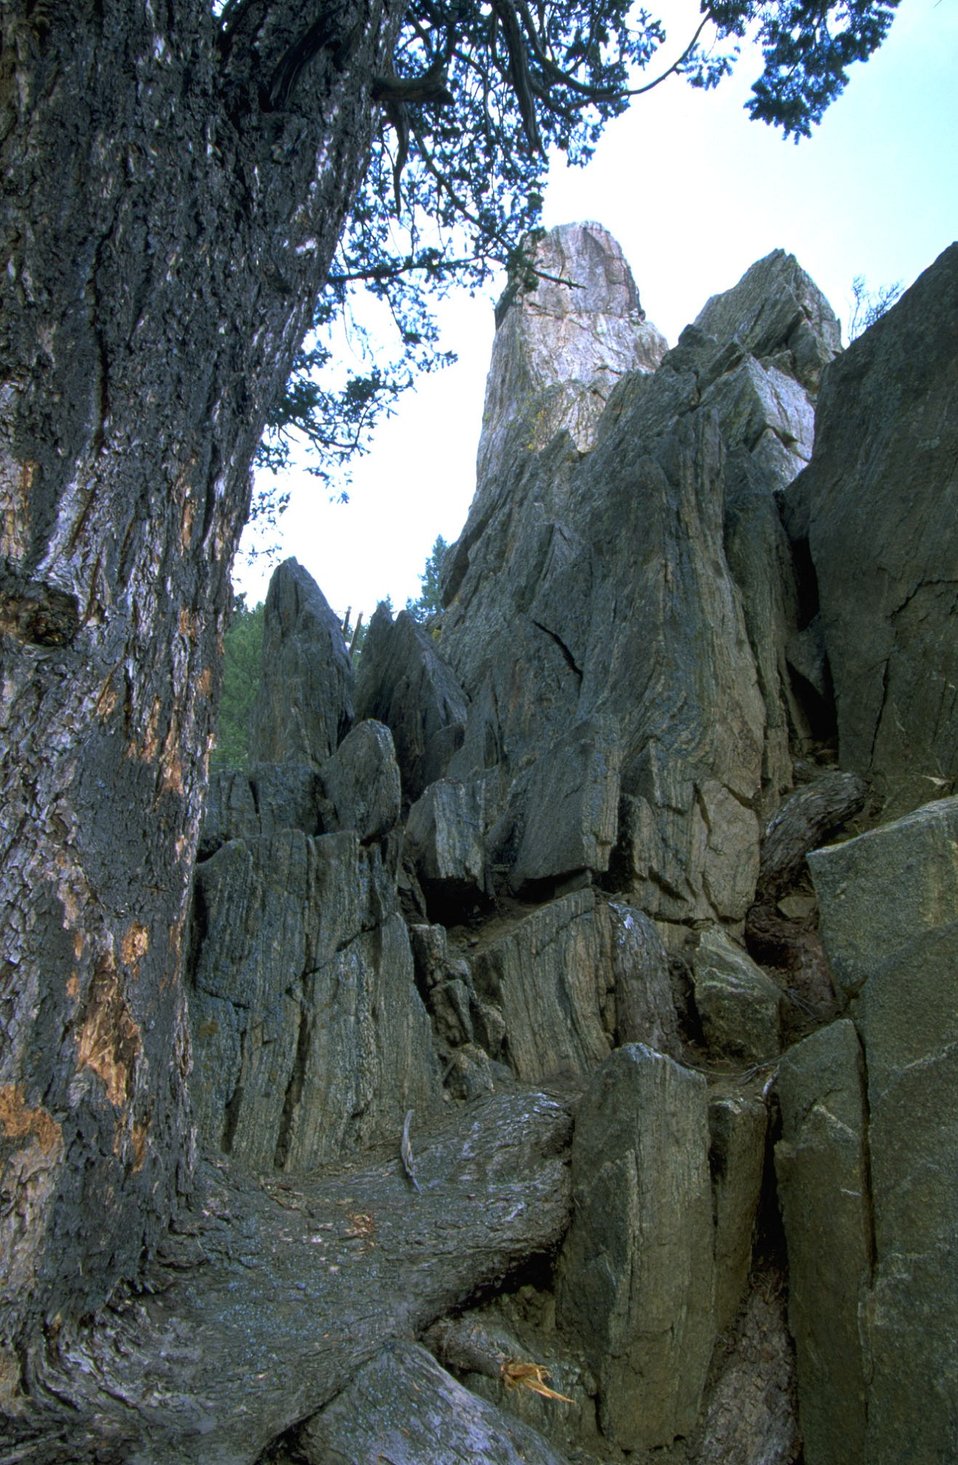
Rock Pillasr next to a big Tree